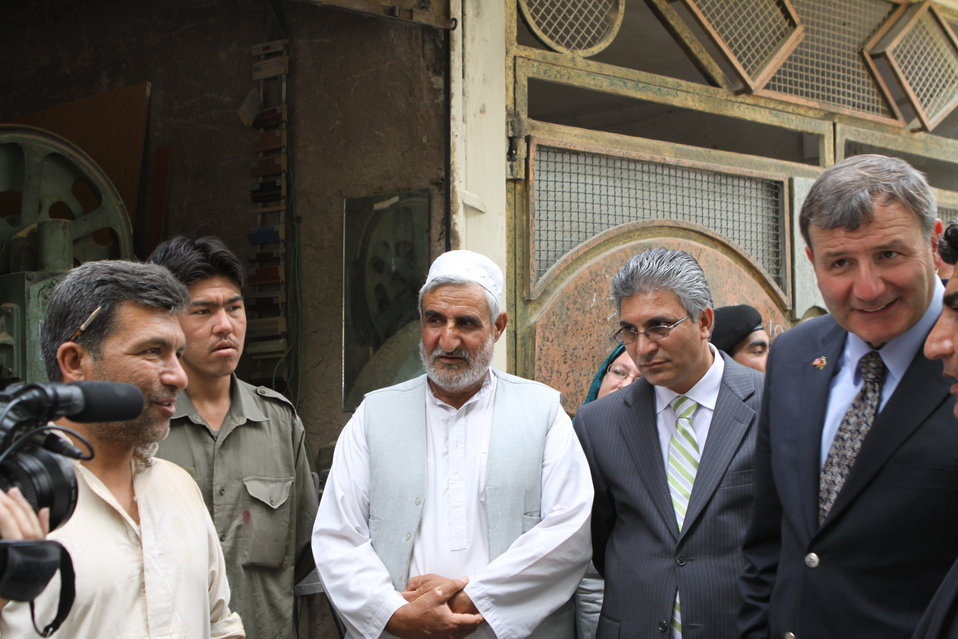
100525 Hirat Marble Conference 701